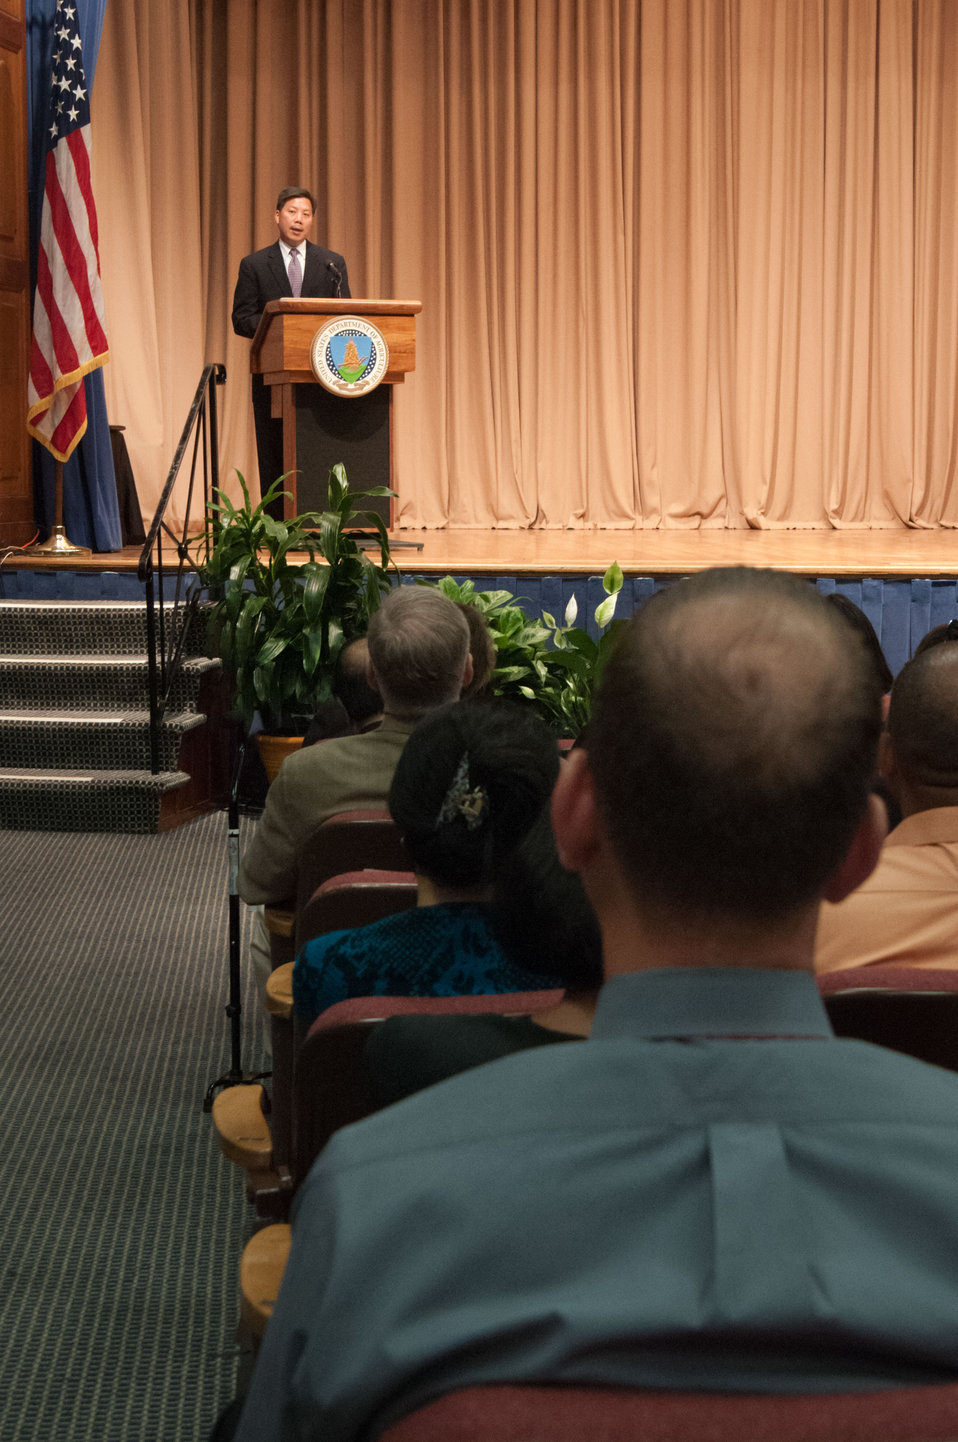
Assistant to the President and Cabinet Secretary The White House Chris Lu was the guest speaker at the 2012 Asian Pacific American Heritage Observance “Striving for Excellence in Leadership, Diversity and Inclusion” at the U.S. Department of Agriculture in Washington, D.C. on Thursday, May 24, 2012. Lu is President Obama’s primary liaison to the Cabinet departments and agencies, helping to coordinate policy and communications strategy and serves as co-chair of the White House Initiative on Asian Americans and Pacific Islanders.